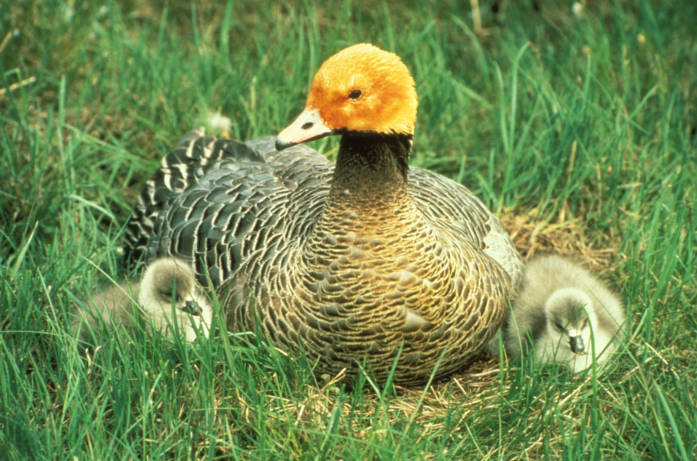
Emperor Goose and Chicks on the Yukon Delta National Wildlife Refuge